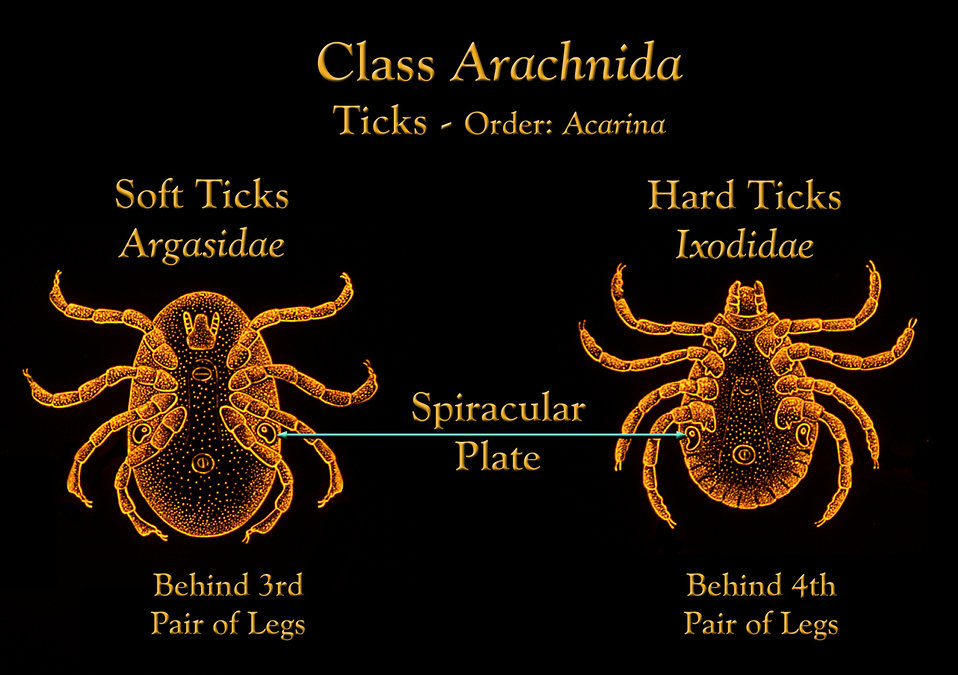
This illustration depicts the location of a tick's breathing orifices, each contained in a hard chitinous 'spiracular plate'.